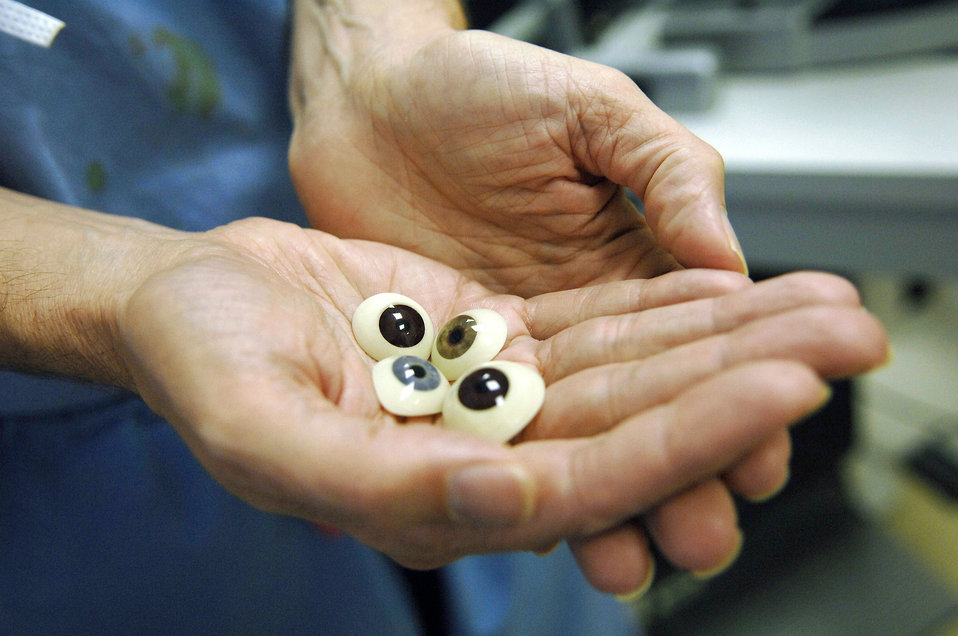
Eye doctors give patients new outlook

Col. (Dr.) Randall Beatty holds various prosthesis that are like large hard contact lenses that fit over the entire eye socket and give the patient a renewed send of self. Doctor Beatty is a 332nd Expeditionary Medical Operations Squadron ophthalmologist and orbital oculoplastics specialist.